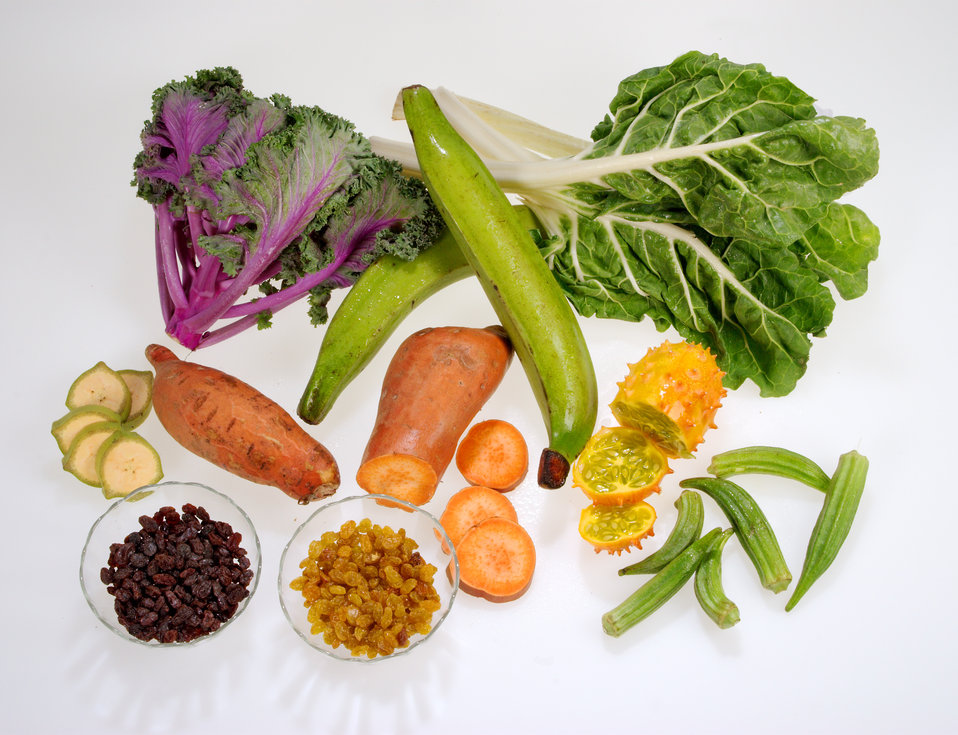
Included in this grouping of fruits and vegetables were two sweet potatoes, okra, a bowl of raisins, and a bowl of sultanas (white raisins), two plantains, kale and Swiss chard, and a horned melon.